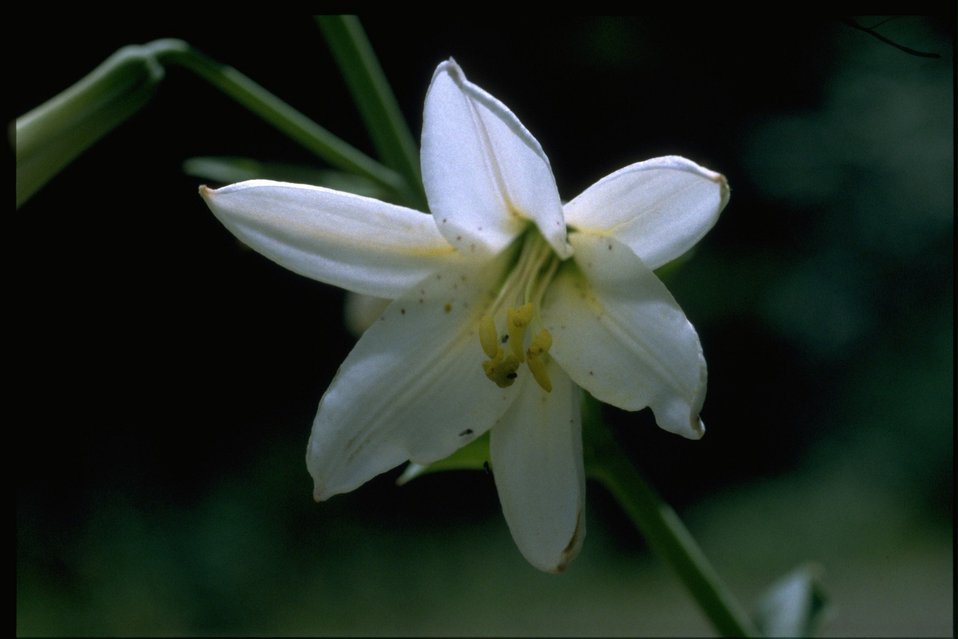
Closeup shot of Lilium washingtonianum.